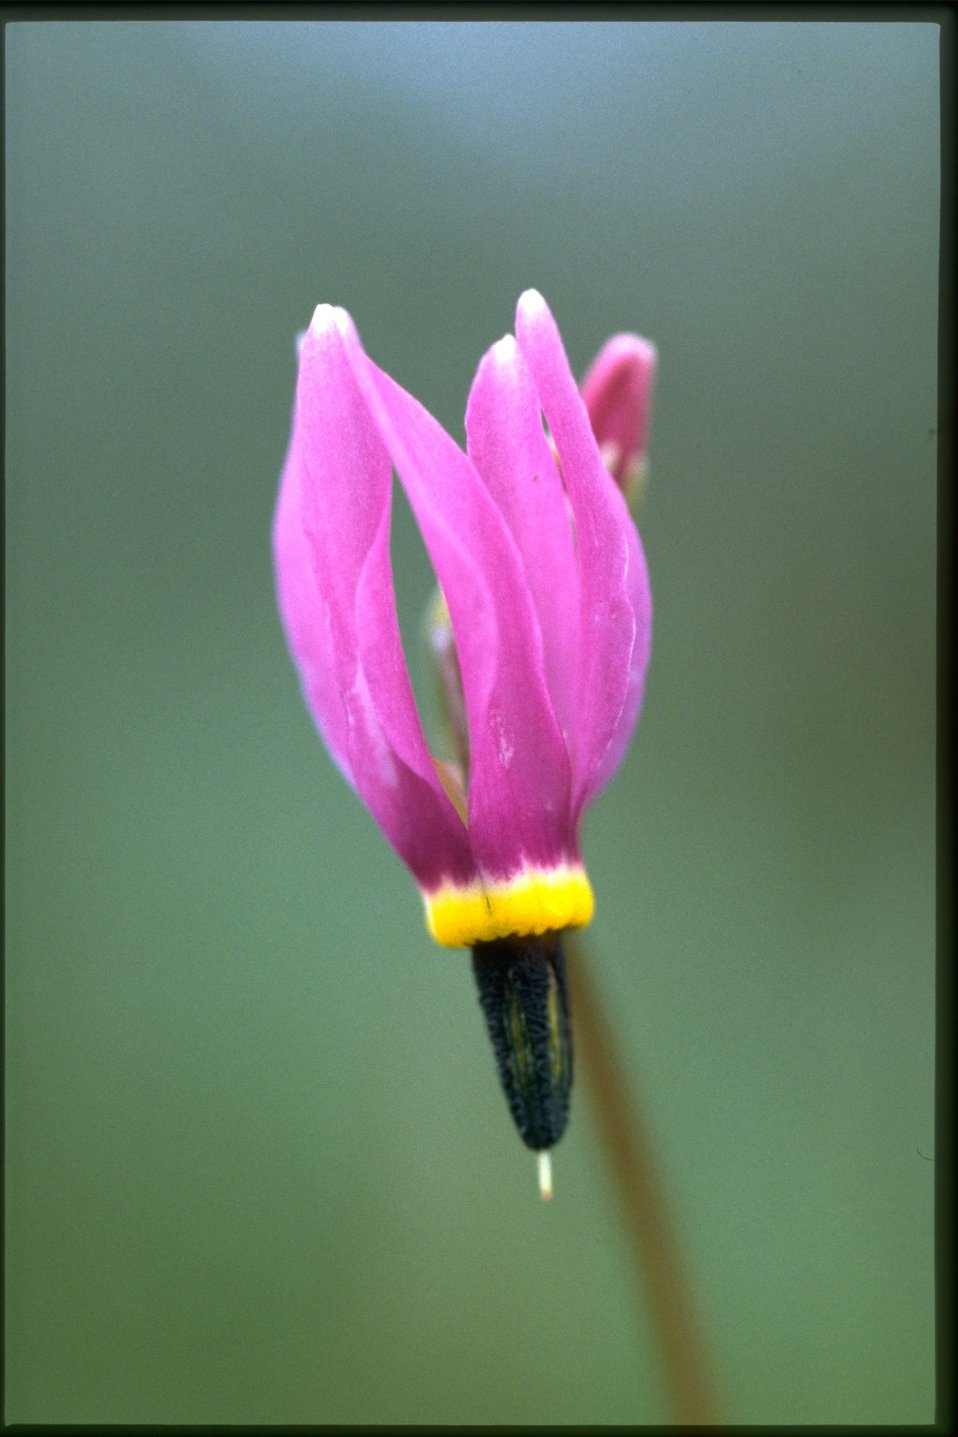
Closeup shot of Dark-Throat Shooting Star, Dodecatheon Pulchellum wildflower.